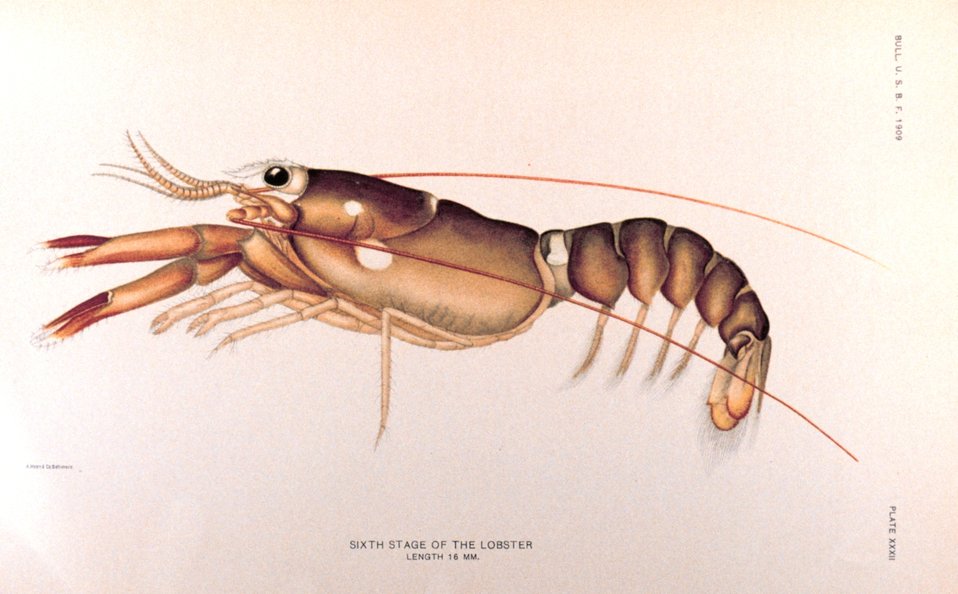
Sixth stage of the lobster. Bulletin U. S. Bureau of Fisheries 1909. Plate XXXII . Length 16 mm.